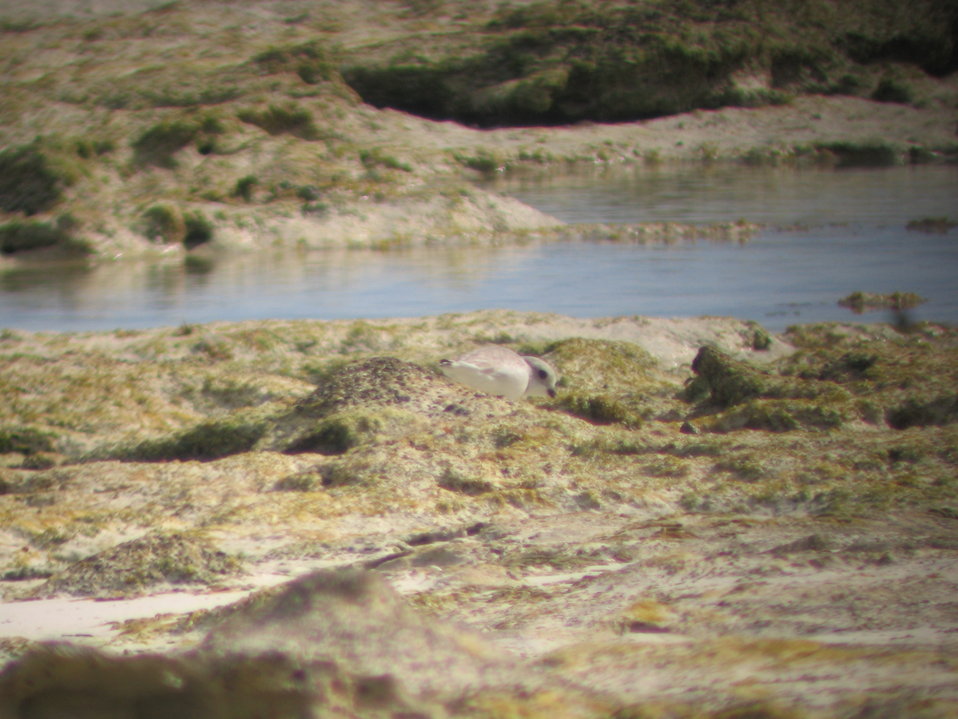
Piping plover foraging in rocky intertidal zone

Photo taken at South Andros Island.